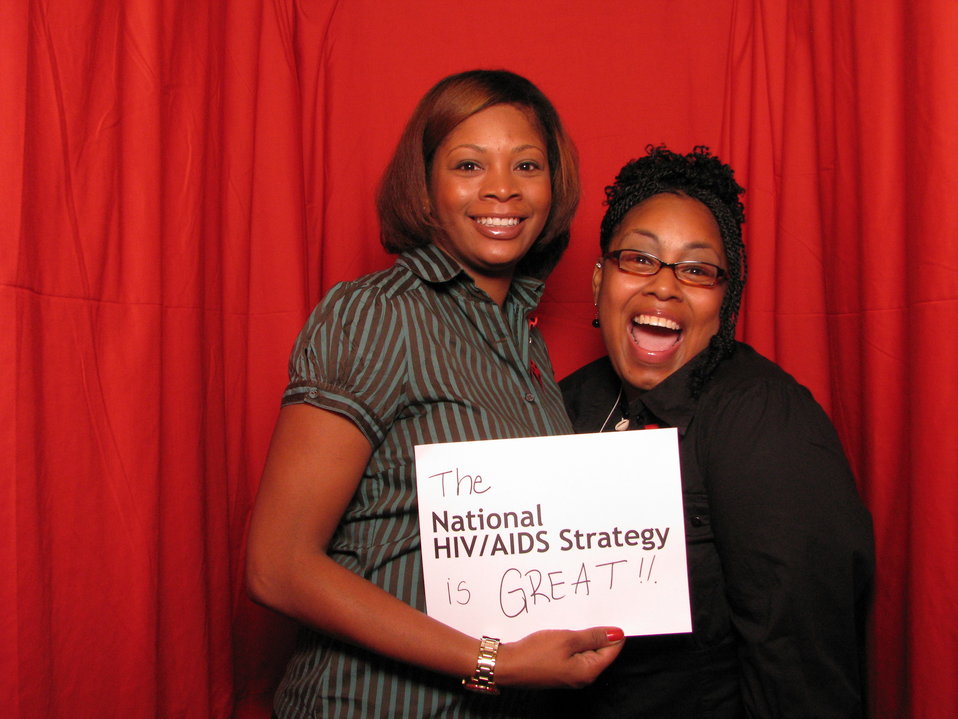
The National HIV/AIDS Strategy is GREAT!!

From the AIDS.gov photo booth at the U.S. Conference on AIDS, September 2010 (Orlando, FL).